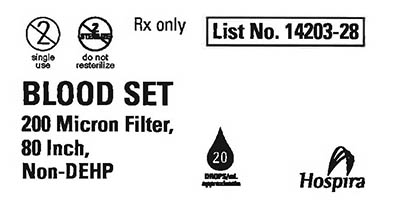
RECALLED – Blood sets used for the administration of blood and blood products

August 13, 2013 – Product Recall – Hospira Issues Important Safety Information for Blood Sets.